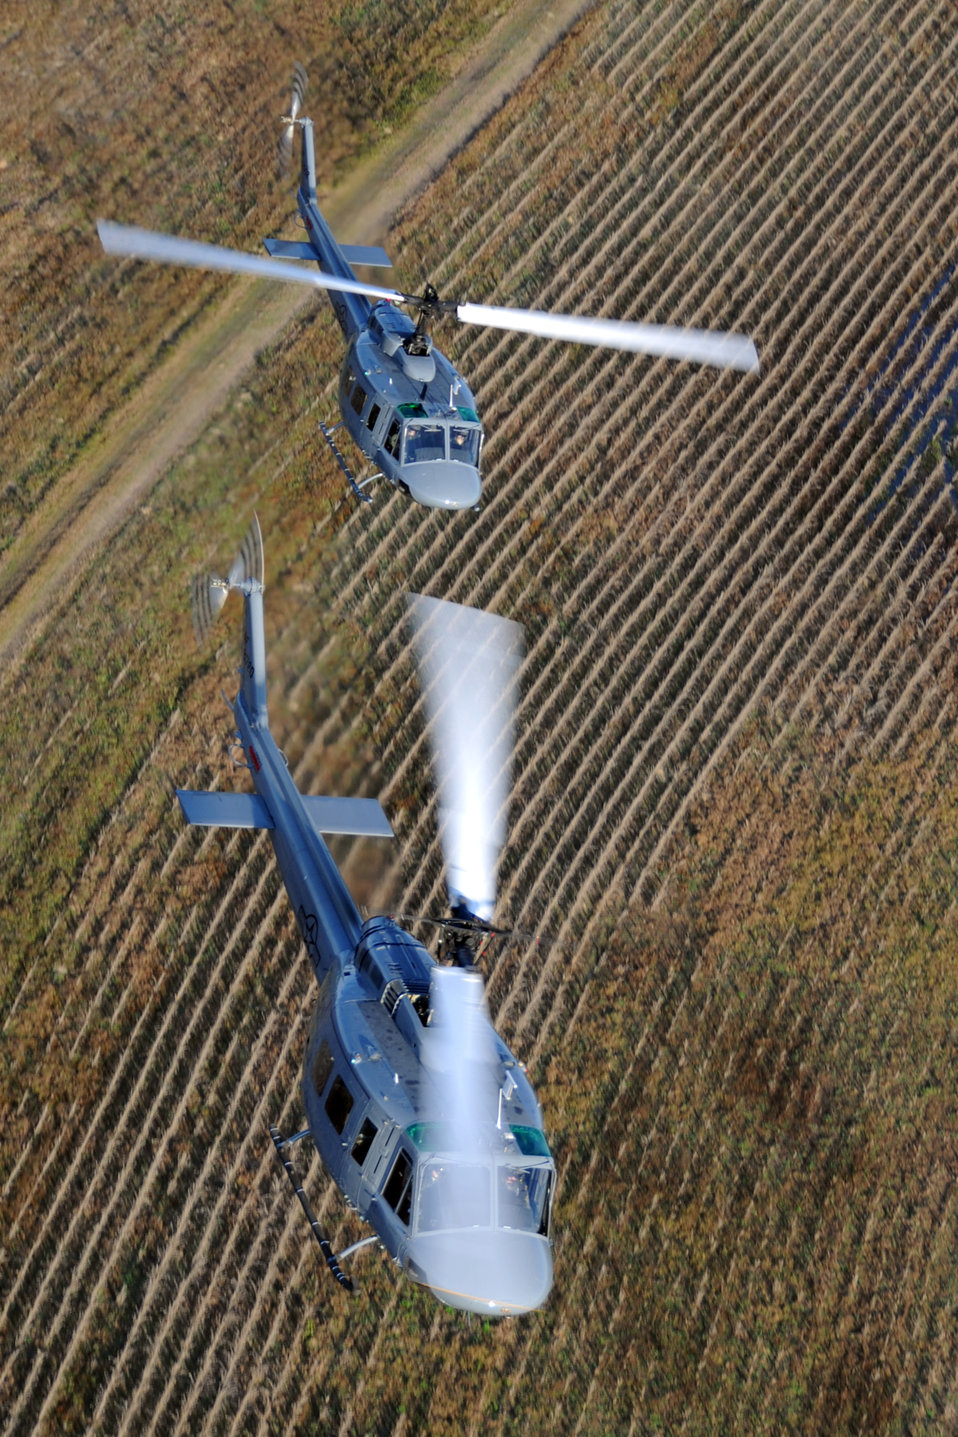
Helicopter training

Students from the 23rd Flying Training Squadron at Fort Rucker, Ala., piloting UH-1H Iroquois helicopters, practice formation-flight patterns. The 23rd FTS is the third and final phase of undergraduate pilot training before the student pilots can obtain their wings. It is the Air Force's primary source of helicopter pilot training for special operations, combat search and rescue, missile support and distinguished visitor airlift missions.